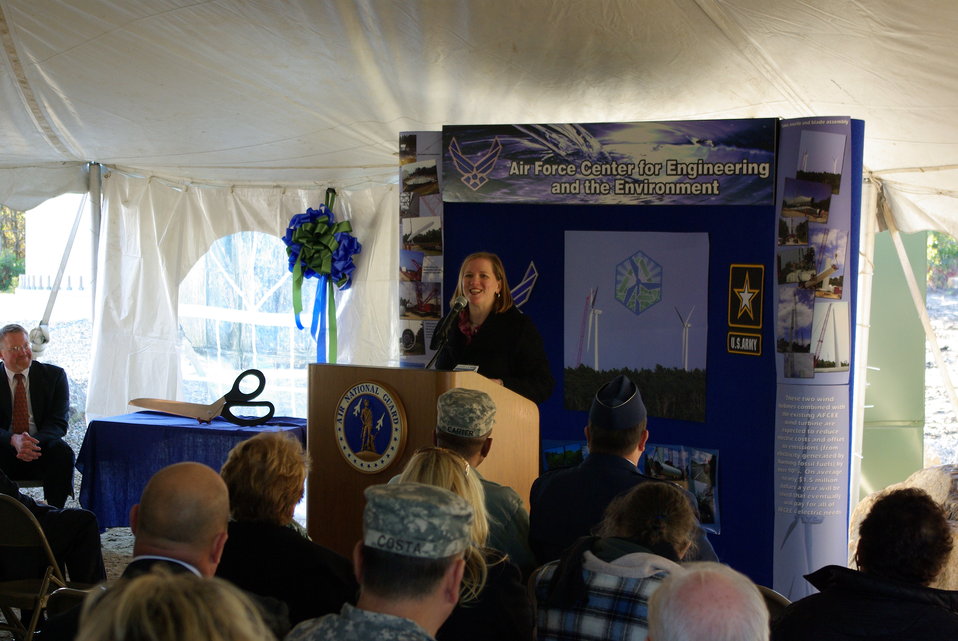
Massachusetts Military Reservation wind turbines

Under secretary of the Air Force Erin Conaton speaks at a ribbon cutting ceremony for two new Air Force wind turbines Oct. 28, 2011, at the Massachusetts Military Reservation in Cape Cod, Mass. The 1.5 megawatt wind turbines, in addition to an existing turbine, were built to offset electrical costs for powering numerous groundwater cleanup systems
at the reservation. The turbines will pay for all the Air Force's electric needs for groundwater remediation at MMR, saving more than $1.5 million per year. They will also offset emissions generated by fossil-fueled power plants, reducing the Air Force's carbon footprint.